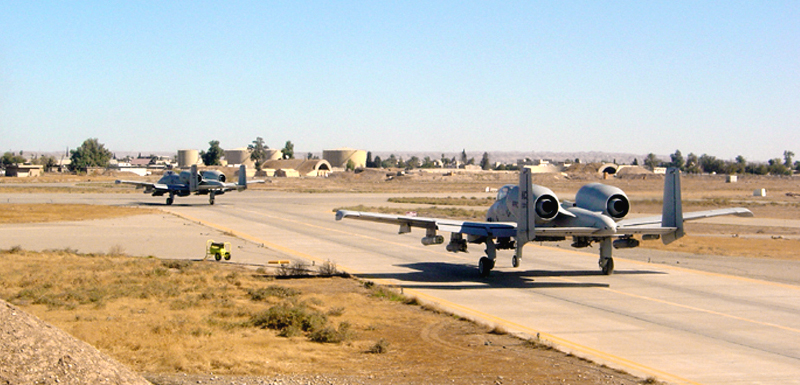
Homeward bound

KIRKUK AIR BASE, Iraq -- Two A-10 Thunderbolt II aircraft assigned to the 303rd Expeditionary Fighter Squadron here taxi to the runway before the squadron's final mission supporting Operation Iraqi Freedom. During the unit's eight-month deployment, squadron pilots flew 1,164 combat sorties and 3,360 flying hours without combat damage. Squadron airmen also helped establish two bases in Iraq. The reservists left Nov. 18 for Whiteman Air Force Base, Mo., where they will rejoin other airmen of the 442nd Fighter Wing.